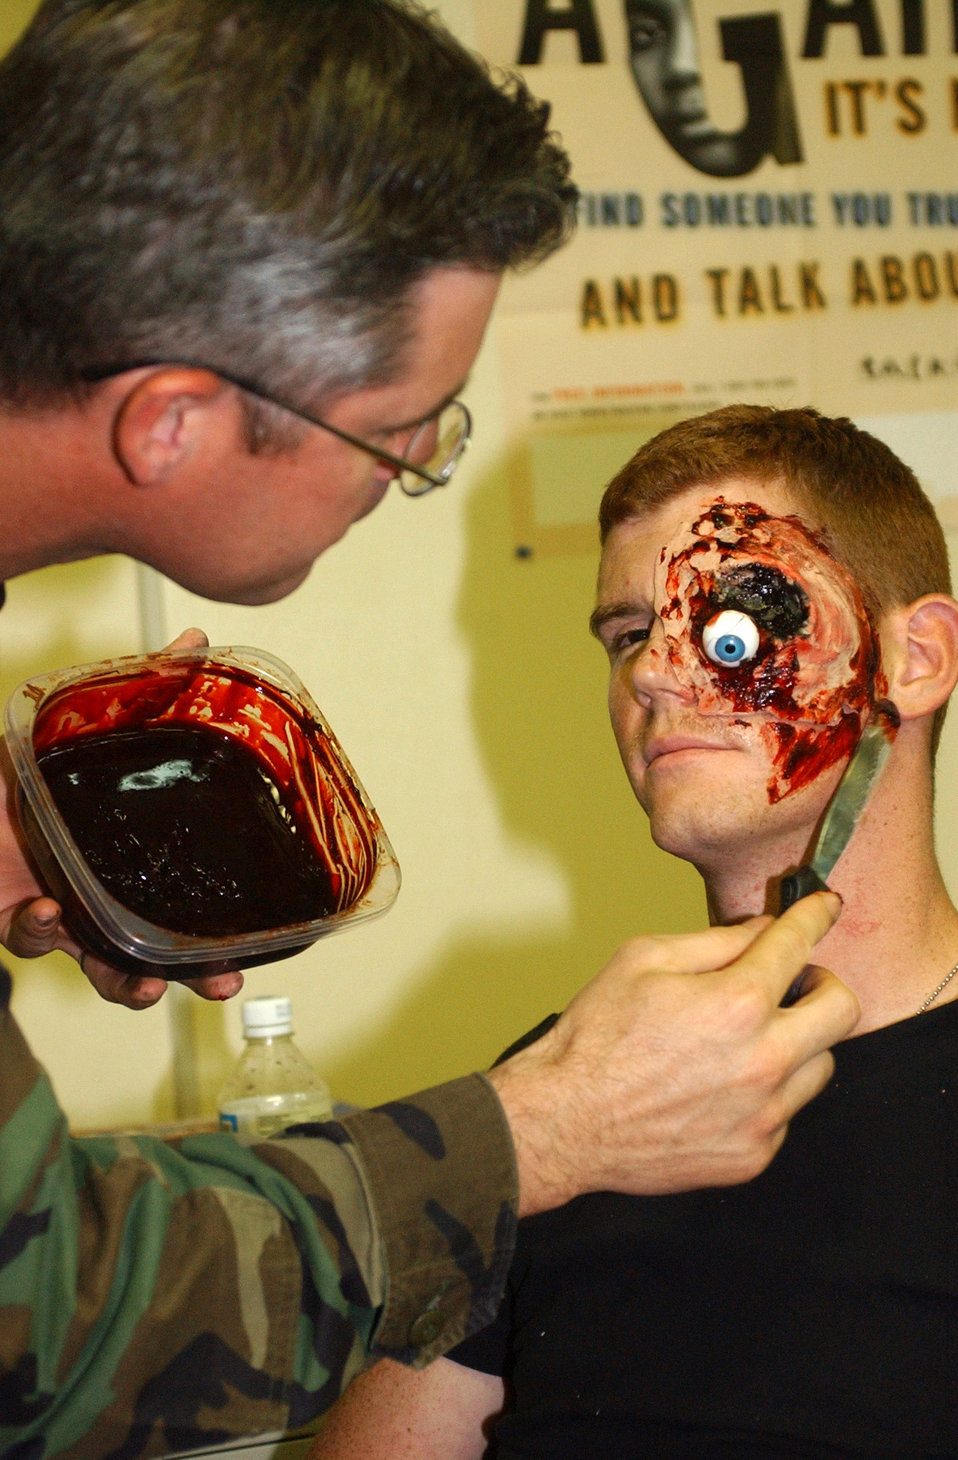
Eye-popping exercise

MISAWA AIR BASE, Japan -- Capt. Brad Kime applies a fake injury to Airman 1st Class Nate Sparling during Exercise Beverly Sunrise here May 19. Captain Kime is a member of the 35th Medical Group and Airman Sparling is a member of the 301st Intelligence Squadron.